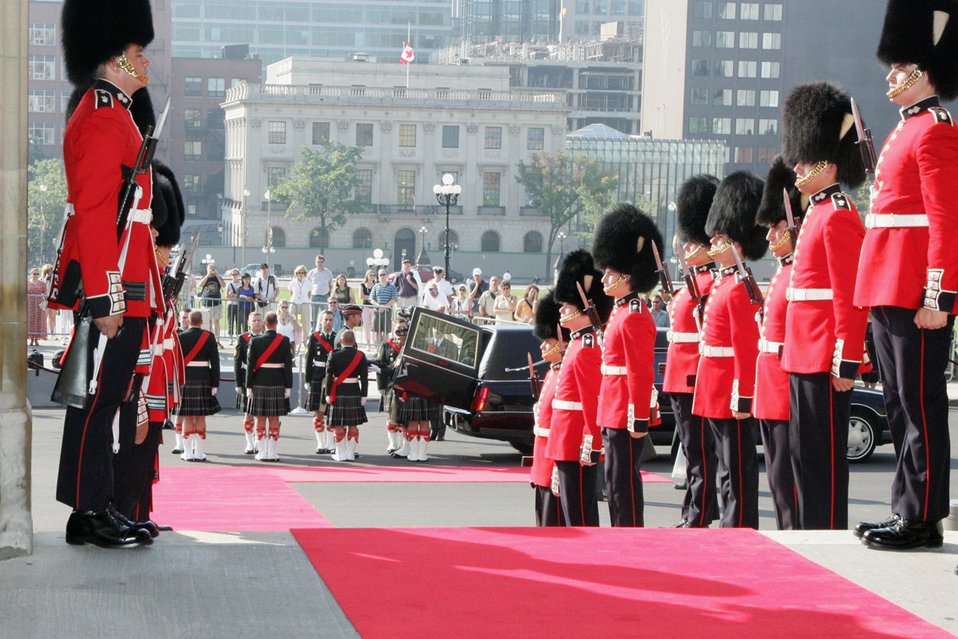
The last survivor of Canada’s 16 Second World War Victoria Cross recipients, Sergeant (Ret) Ernest Alvia “Smokey” Smith, laid in state on Parliament Hill August 9. Ottawa, Ontario, Canada.